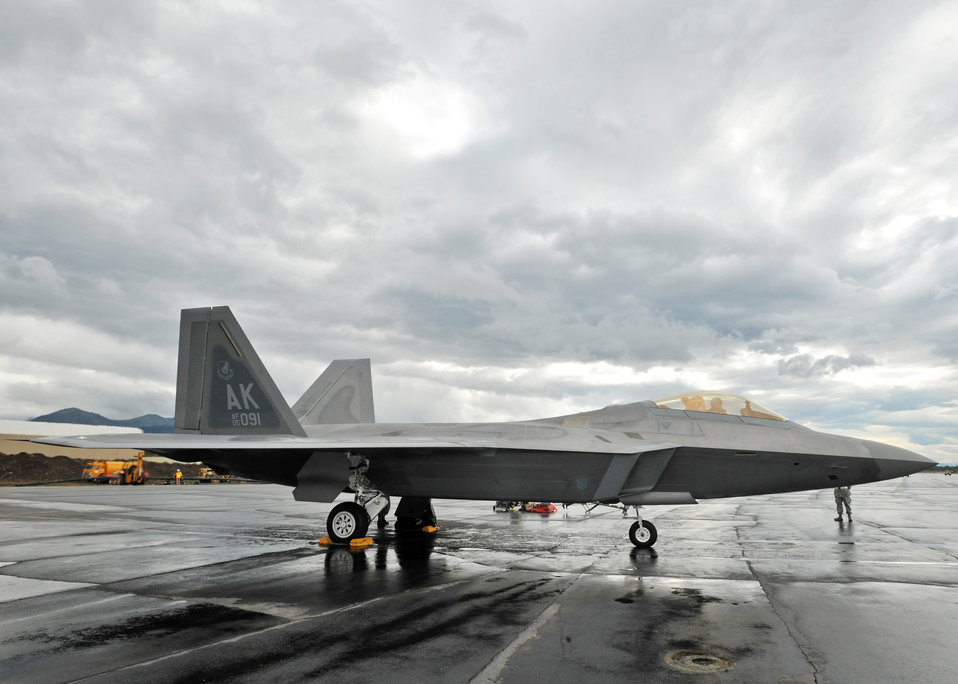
Raptors at Red Flag-Alaska

An F-22 Raptor pilot faces a rainy day of flying July 27 during Red Flag-Alaska at Elmendorf Air Force Base, Alaska. Red Flag is a field training exercise for U.S. coalition forces that provides joint offensive counter-air, interdiction close air support, and large force employment training in a simulated combat environment. Participating bases include Elmendorf and Eielson Air Force bases, Alaska, and Osan Air Base, South Korea.